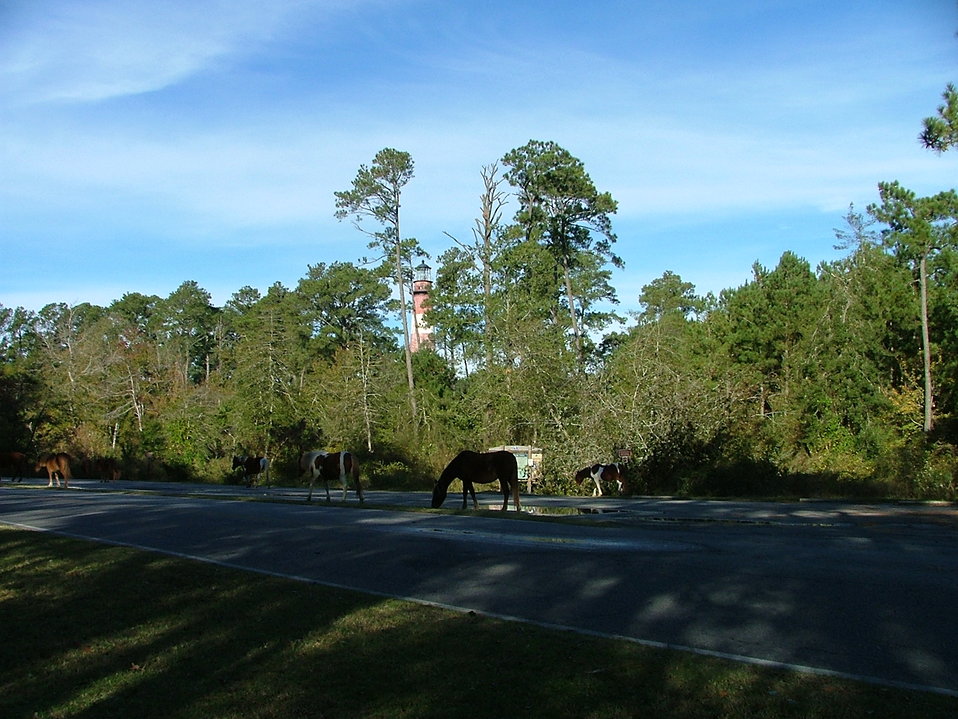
Chincoteague ponies after Hurricane Sandy (VA)

Chincoteague ponies grazing in the Lighthouse Trail parking lotafter Hurricane Sandy.